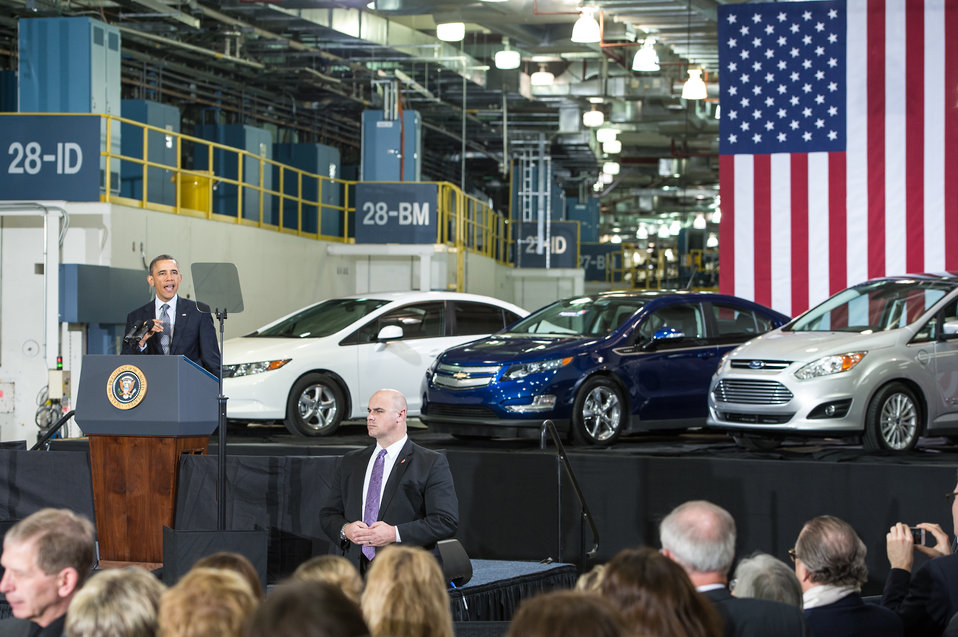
President Obama visited Argonne National Laboratory to tour lab facilities and discuss American's energy policies during a news conference.